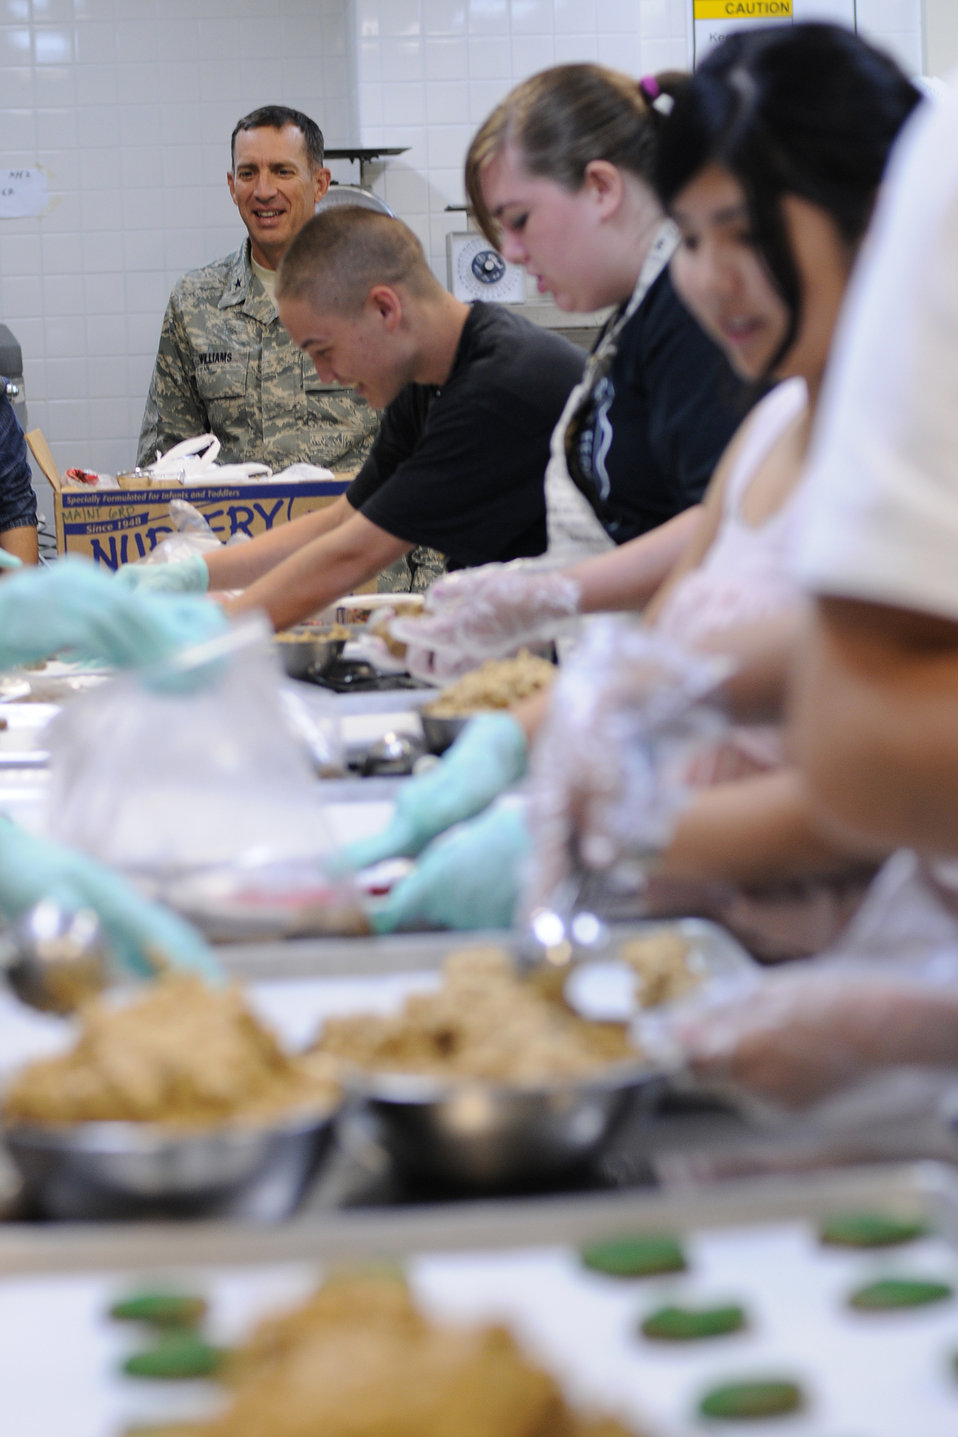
Kadena Cookie Drop

Brig. Gen. Brett T. Williams, 18th Wing commander, visits members of the National Honor Society from Kadena High School as they prepare cookies Nov. 19 at the 18th Force Support Squadron's central kitchen on Kadena Air Base, Japan. Volunteers prepared more than 24,000 cookies that will be delivered to servicemembers living in the dorms here at Kadena.